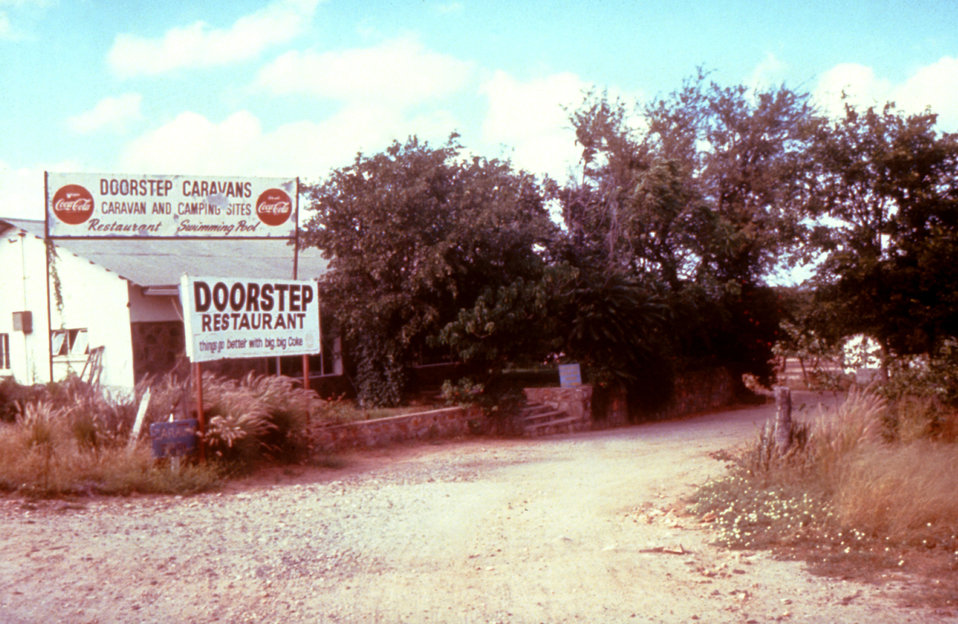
This photo was taken in Caravan Park, a Zimbabwean camping site where 2 travelers stayed before falling ill with Marburg virus.